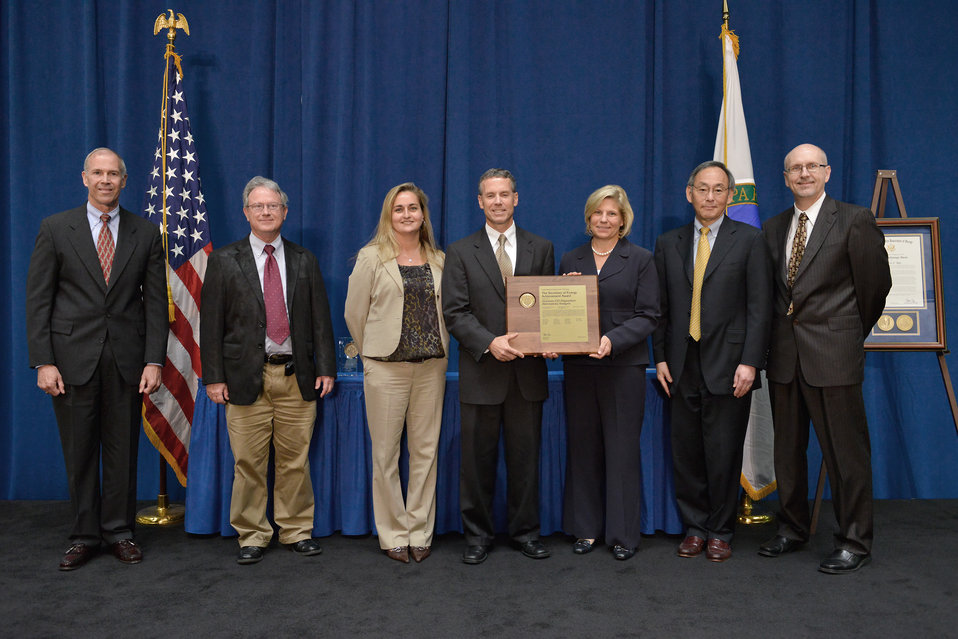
Uranium 233

Awardees (not all pictured): James J. Bolon, Wendy A. Cain, Samuel N. Callahan, John T. Carilli, Frank Disanza, Don F. Gagel, Ben Garcia, Christine M Gelles, Leigh B. Gunn
Jane L. Hamilton, Brenda L. Hawks, Chelsea D. Hubbard, John W. Krueger, Douglas Moore, Bryan A. Roy, Sarah S. Schaefer, Dirk Schmidhofer, Scott A. Wade, Brad S. Watson, Jerry A. Weber, Dana M. Willaford. In recognition of the U-233 Alternative Analysis Team for their extraordinary efforts to find cost effective and technically viable alternatives for disposition of the U-233 stored at Oak Ridge National Laboratory. These contributions resulted in acceleration of the project schedule and reduction of the cost and risk to the Department and to the public. The U-233 Alternative Analysis Team's willingness to re-examine long-held assumptions, establish partnerships, and solve significant challenges have resulted in a lasting contribution to the Department of Energy's environmental, science, and national security missions.